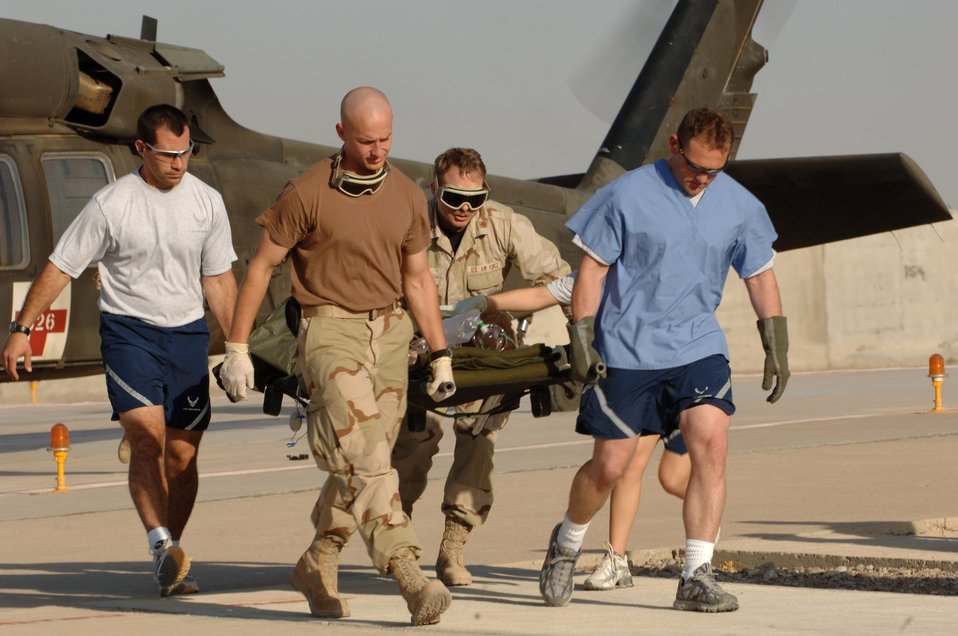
EMEDS

Capt. Ian Rybczynsk, Staff Sgt. Mark Frayser, and Maj. Layne Bennion and Maj. Brandon Smith, 506th Expeditionary Medical Squadron, offload a patient from an Army helecopter for treatment at the emergency room Sept. 22. Litter teams are made up of any EMEDS personnel available to help at the time of the incident.